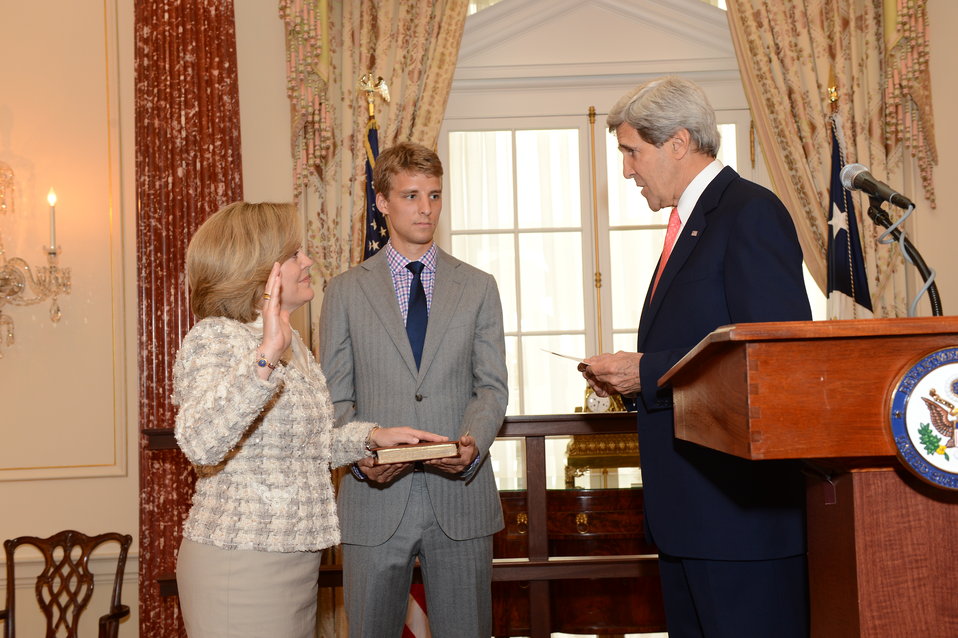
Secretary Kerry Officiates the Swearing-In Ceremony for Ambassador-Designate Jones

U.S. Secretary of State John Kerry officiates at the swearing-in ceremony for U.S. Ambassador-Designate to Libya Deborah Jones at the U.S. Department of State in Washington, D.C., on June 11, 2013.